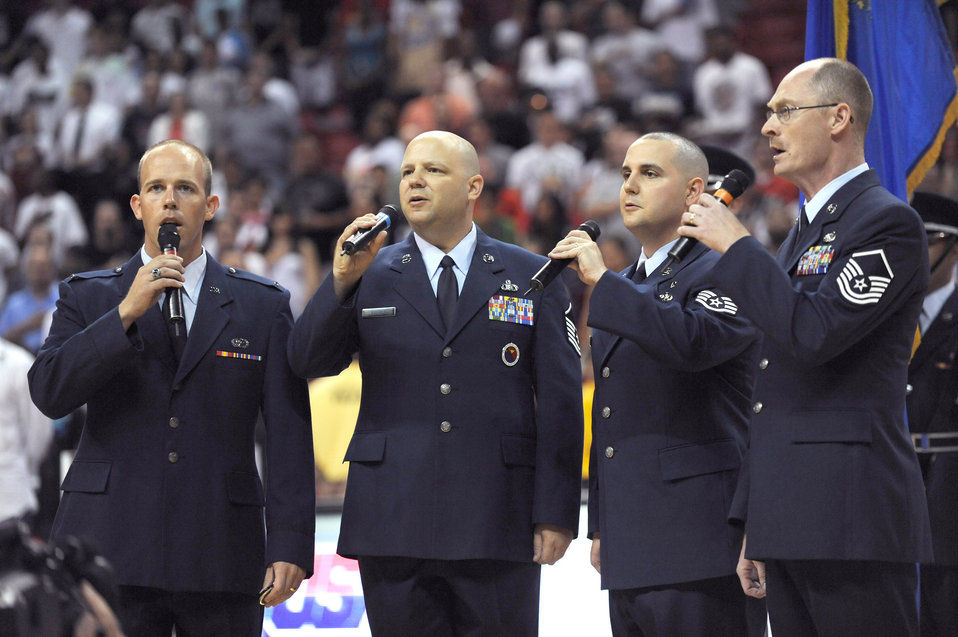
Nellis Airmen honored at USA Basketball exhibition

1st Lt. Stuart Fillmore, Master Sgt. Robert Brooks, Staff Sgt. Jason Gilbert and Master Sgt. Joseph Ford, of the Nellis Men's Quartet, perform the National Anthem before a USA Basketball exhibition game at the Thomas and Mack Center in Las Vegas July 25 where Nellis Air Force Base, Nev., Airmen were honored.